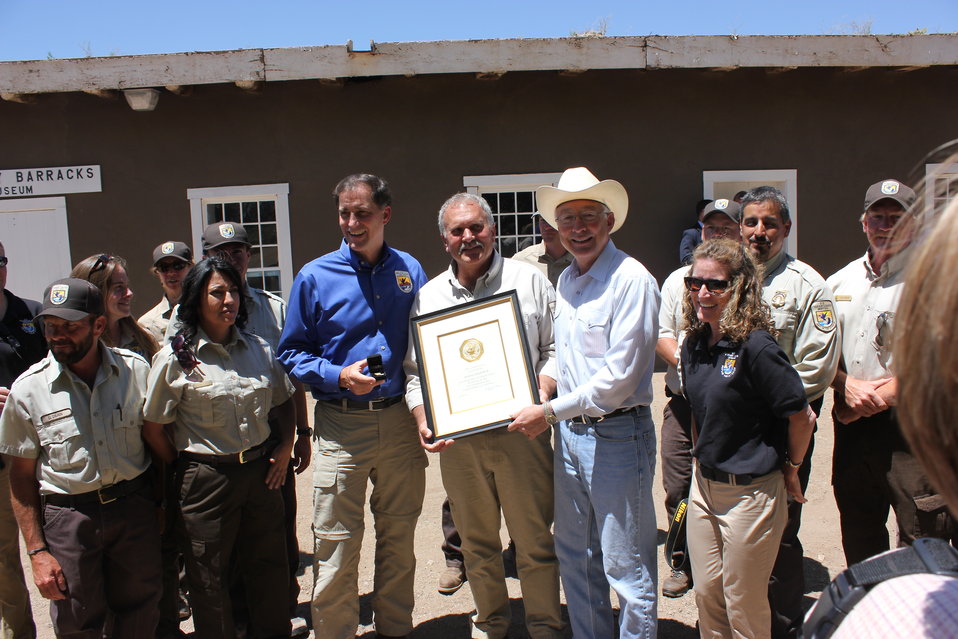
Historic Conservation Easement in Sangre de Cristo Mountains

Interior Secretary, Ken Salazar, and U.S. Fish and Wildlife Director, Dan Ashe, present Rick Schnaderbeck with an award for his many accomplishments throughout his 30 years with the Service.